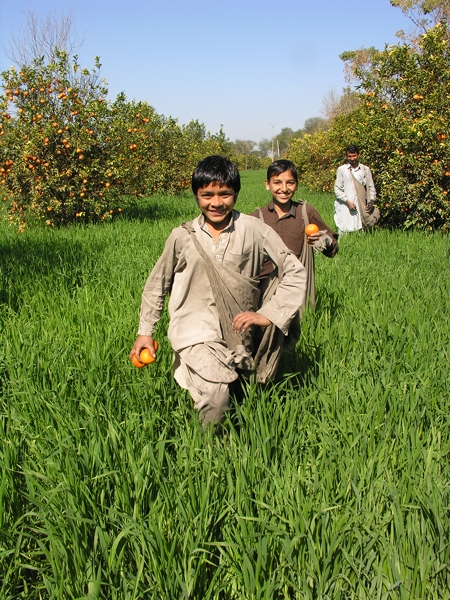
m DSCN4318